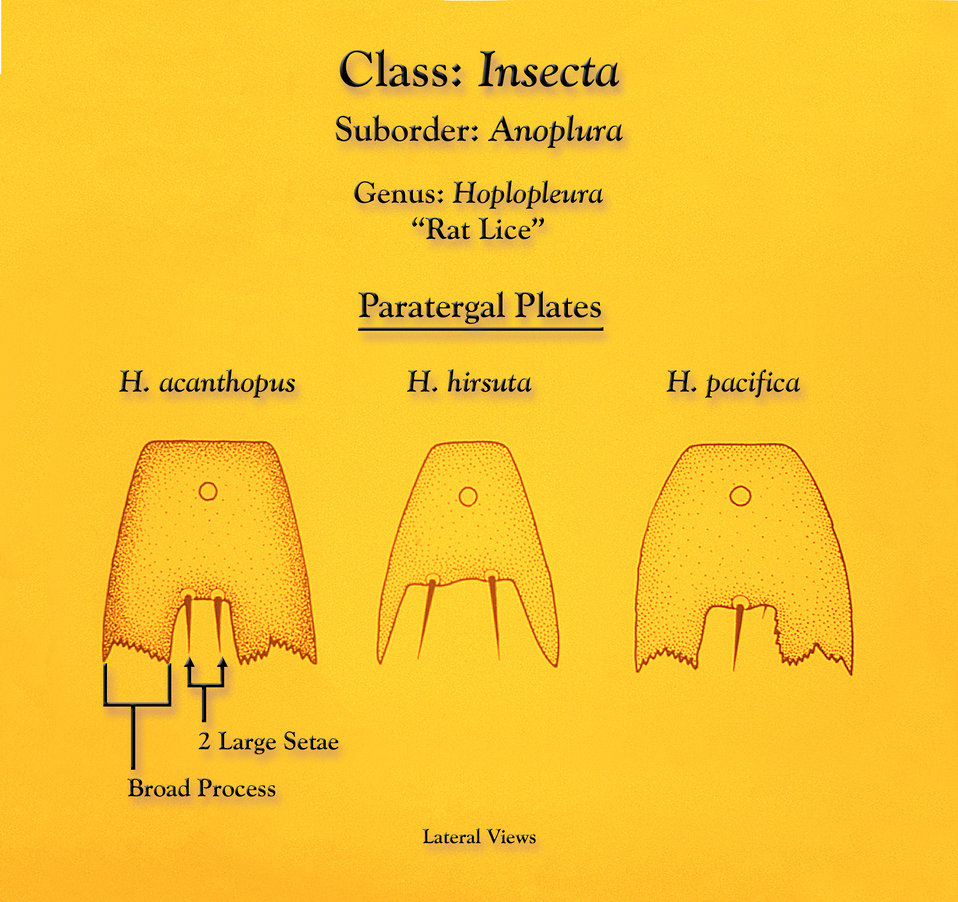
This illustration depicts the morphologic characteristics of the lateral paratergal plates of three species from the genus Hoplopleura